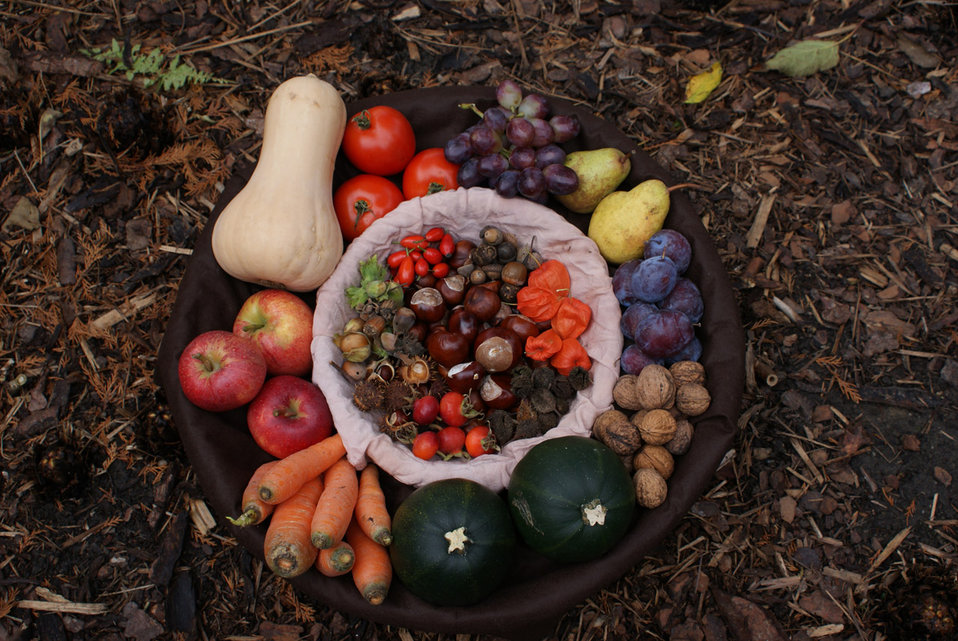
Thanksgiving 2

Basket at thanksgiving, filled with fruits and autumn natural materials.